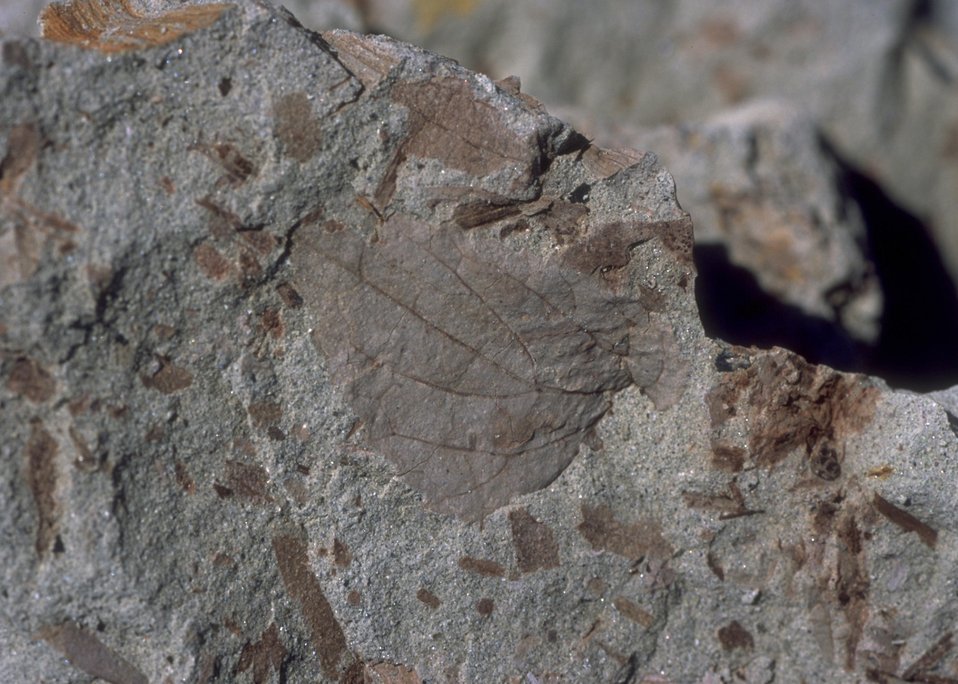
Close up of fossil vegetation, Cedar Ridge Paleo area, Worland Field Office.